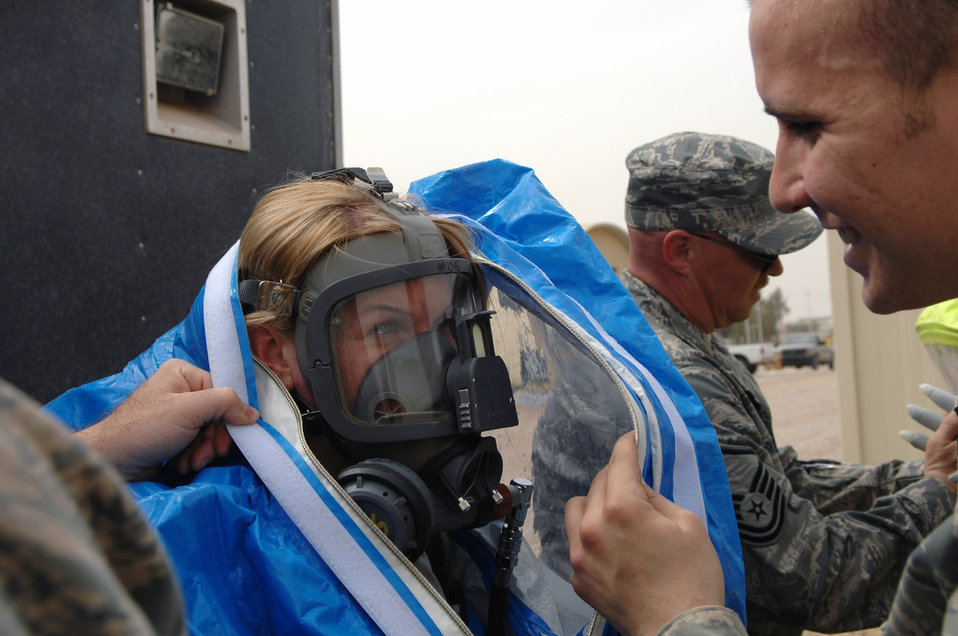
Battle drills condition emergency responders

Airman 1st Class Nathan Milliman helps Senior Airman Krista McVicar put on a protection suit before responding to a mysterious substance scenerio during a battle drill March 26 at Balad Air Base, Iraq. The suits can be worn for up to one hour; Airmen must work diligently to ensure they don't become exhausted or too warm when wearing the suits. The suits provide emergency managers with protection from chemical, biological, radiological or nuclear substances. Both Airmen are 332nd Expeditionary Civil Engineer Squadron emergency managers. Airman Milliman is deployed from Hurlburt Field, Fla.; Airman McVicar is deployed from Davis-Monthan Air Force Base, Ariz.